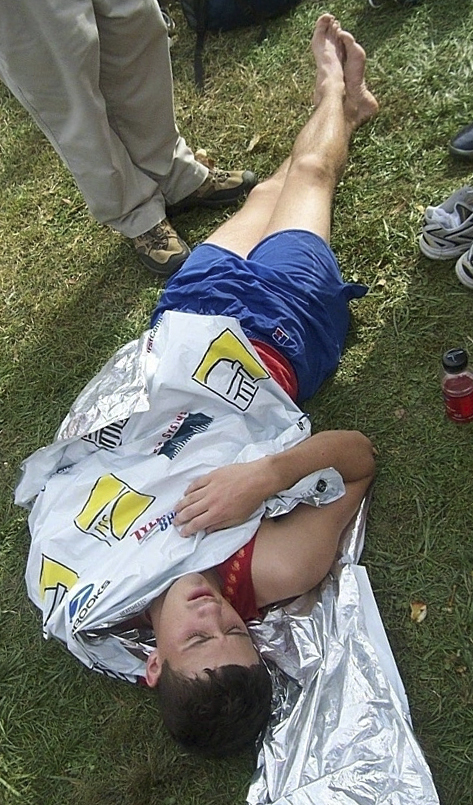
ROTC cadets use marathon to reinforce core values

ARLINGTON, Va. -- Air Force ROTC Cadet C. Scott Martin rests after running in the Marine Corps Marathon. Nine University of Notre Dame cadets from Air Force ROTC Detachment 225 traveled here from Indiana for the race.